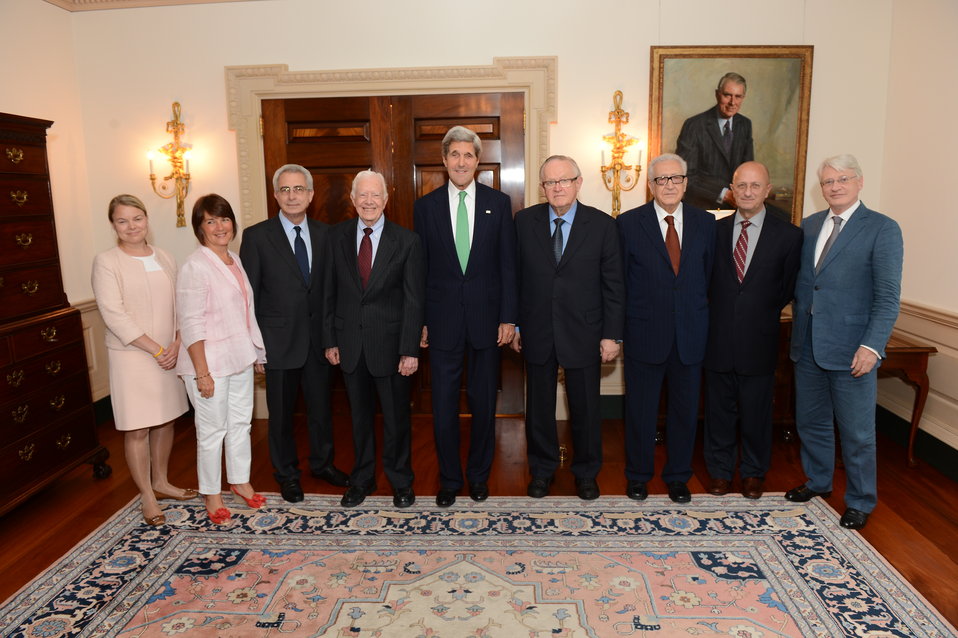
Secretary Kerry Meets With the Elders

U.S. Secretary of State John Kerry meets with the Elders, an independent group of global leaders who work together for peace and human rights, at the U.S. Department of State in Washington, D.C., on July 22, 2013.